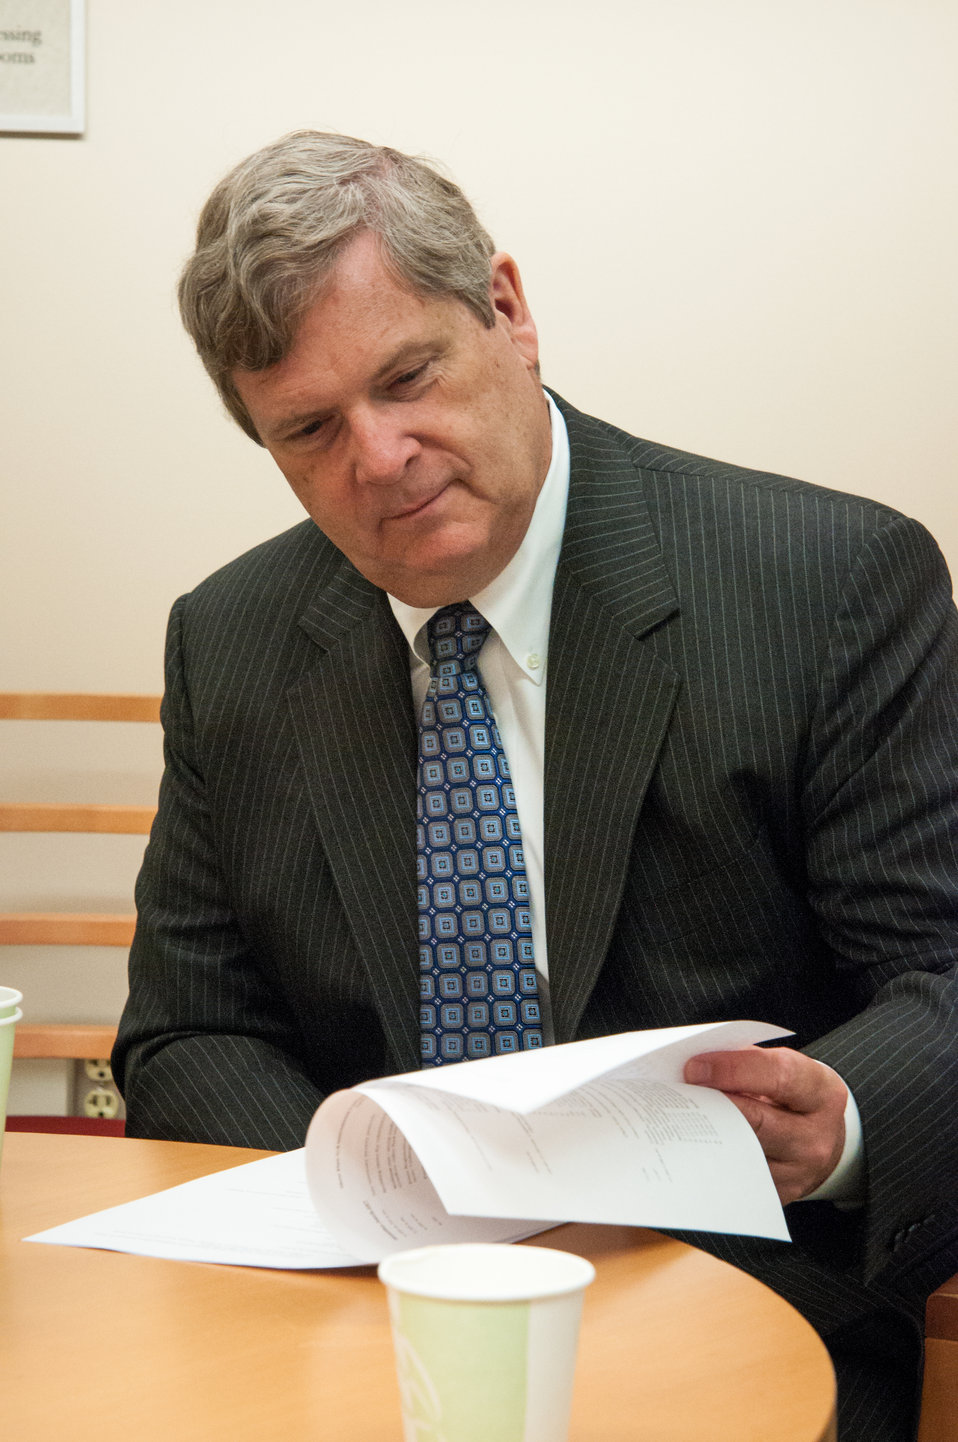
Agriculture Secretary Tom Vilsack reviews notes before making opening remarks at the G-8 International Conference on Open Data for Agriculture in Washington, D.C. on Monday, Apr. 29, 2013. Secretary Vilsack announced the launch of a new 'virtual community' as part of a suite of actions, including the release of new data, that the U.S. is taking to give farmers and ranchers, scientists, policy makers and other members of the public easy access to publicly funded data to help increase food security and nutrition.